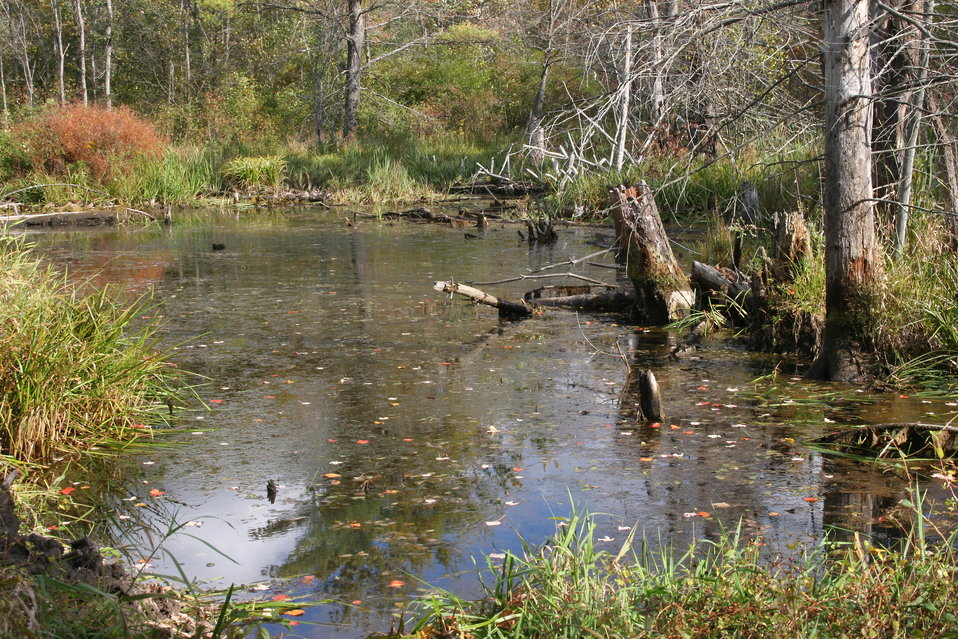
Fall scene at Great Bay NWR

Fall scene at Great Bay National Wildlife Refuge in Newington, NH.